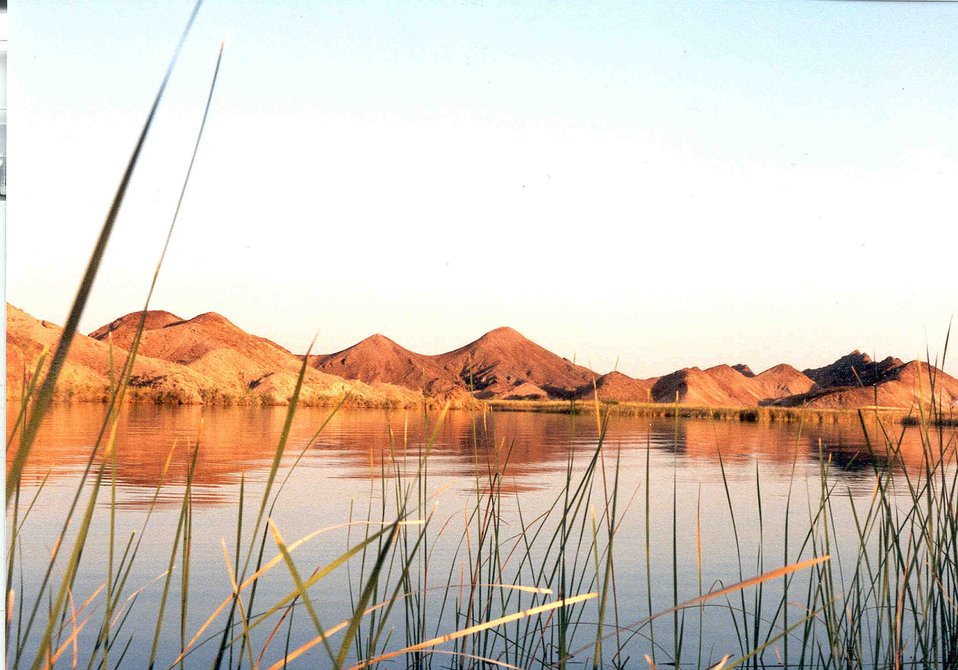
This is a clear brisk morning in the backwaters of Squaw Lake.